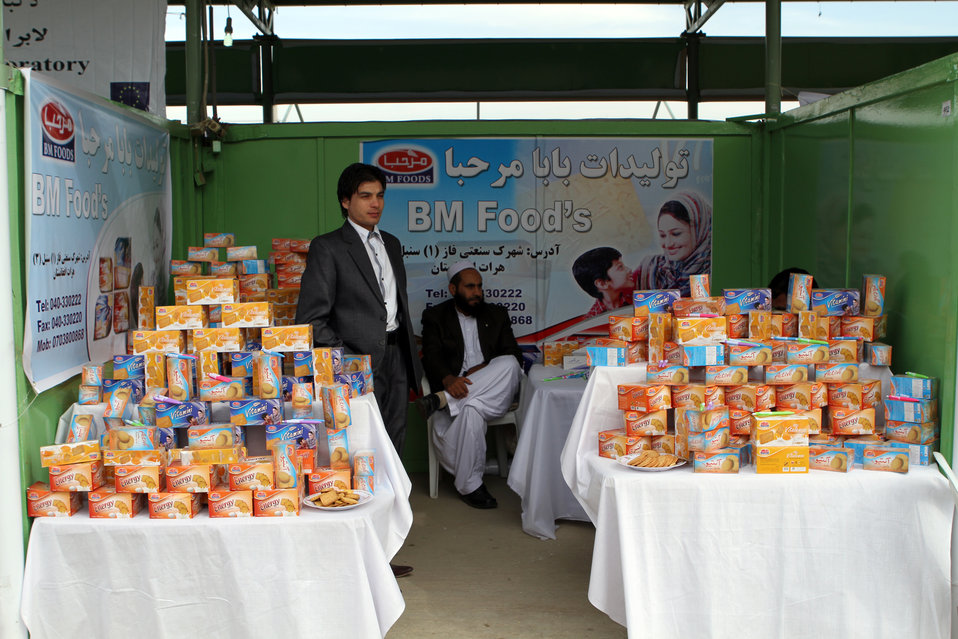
Agfair event